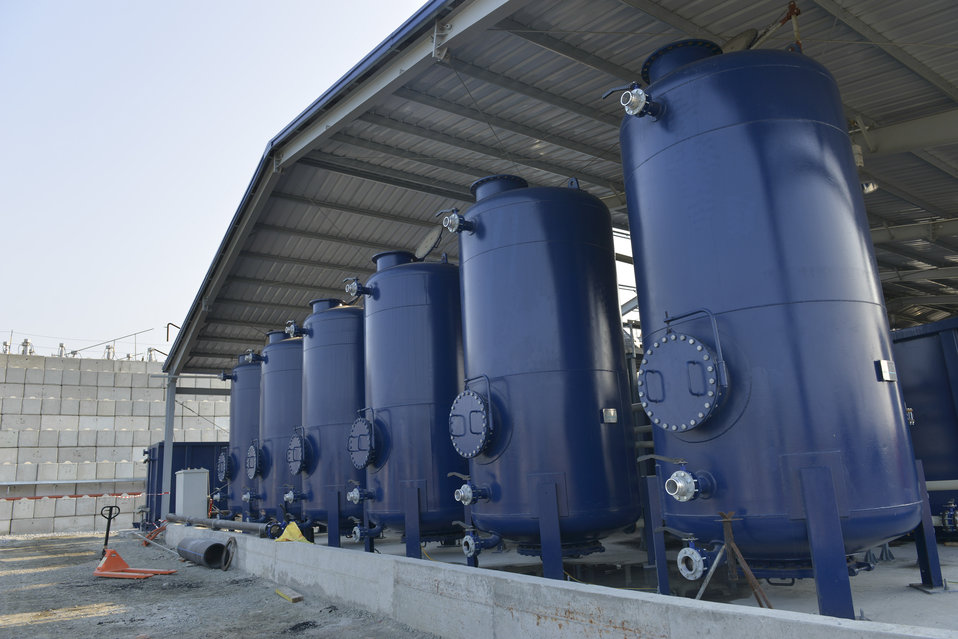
The liquid and vapor treatment plant/system constructucted north of the containment structure.

March 24, 2014.